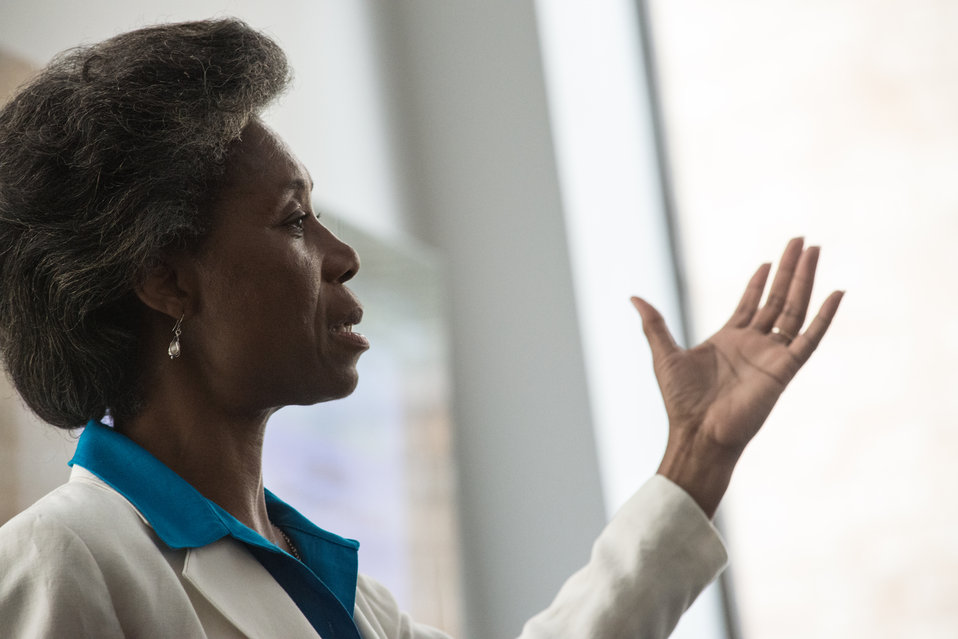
Sage Horizons Consulting Owner Cynthia Gibbs speaks at the U.S. Department of Agriculture’s (USDA) Rural Development (RD) 2nd Annual Cultural Transformation kickoff opening ceremony and forums, themed “Employees Influencing Change,” on Tuesday, Aug. 13, 2013, USDA in Washington, D.C.